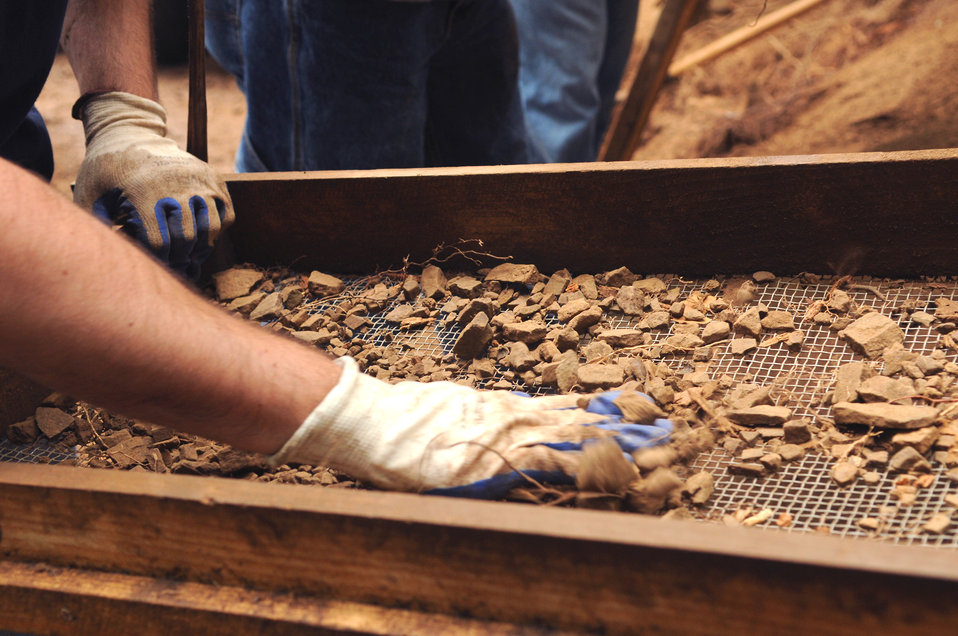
Joint team searches for fallen Airmen in local German forest

A member of the Joint Prisoners of War/Missing in Action Accounting Command sifts through dirt and rocks looking for wreckage of a downed World War II aircraft July 28, 2010, in Rheinland-Pfalz, Germany. The mission of the JPAC is to achieve the fullest possible accounting of all Americans missing as a result of the nation's past conflicts.